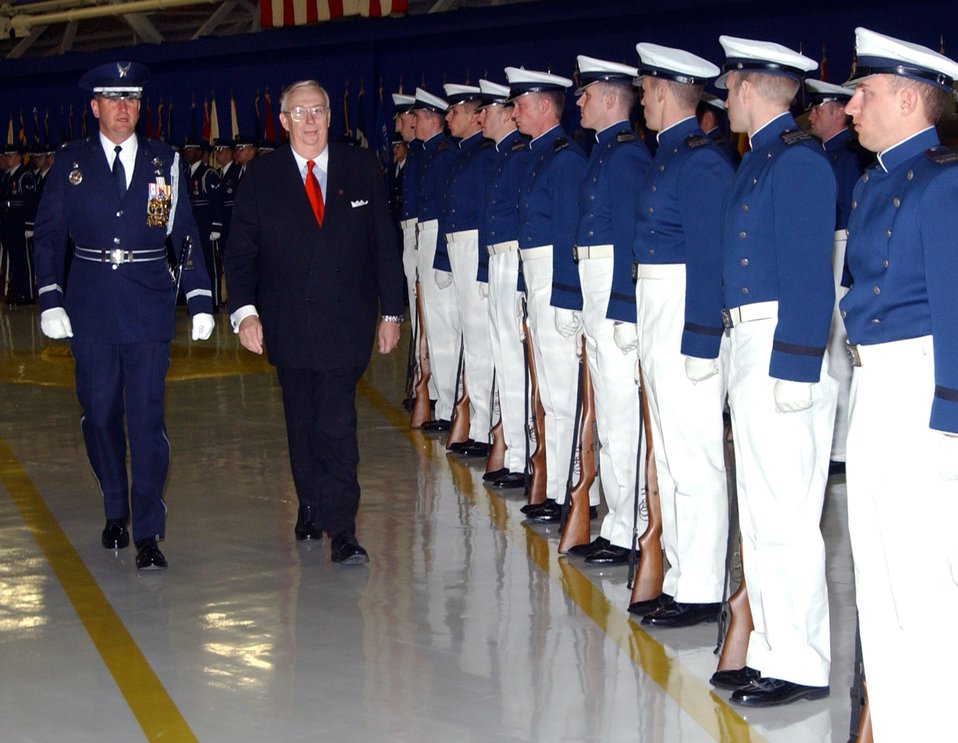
Secretary Roche retires

ANDREWS AIR FORCE BASE, Md. -- Air Force Secretary Dr. James G. Roche is escorted through a pass-and-review of the troops during his retirement ceremony here Jan. 18.